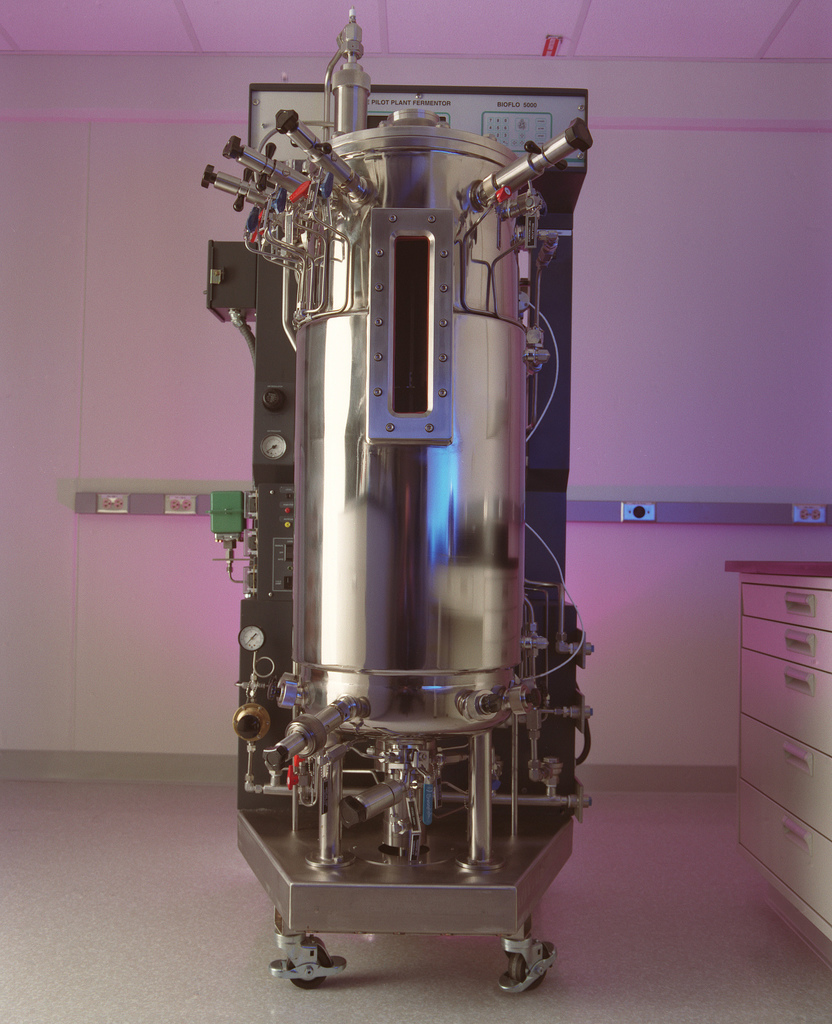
The full power of RNA, Protein, and metabolite profiling and associated computational technologies is realized by using bioreactors at Pacific Northwest National Laboratory. Bioreactors exactly reproduce culture conditions over multiple experiments and obtain cell populations with a minimal level of biochemical variability.